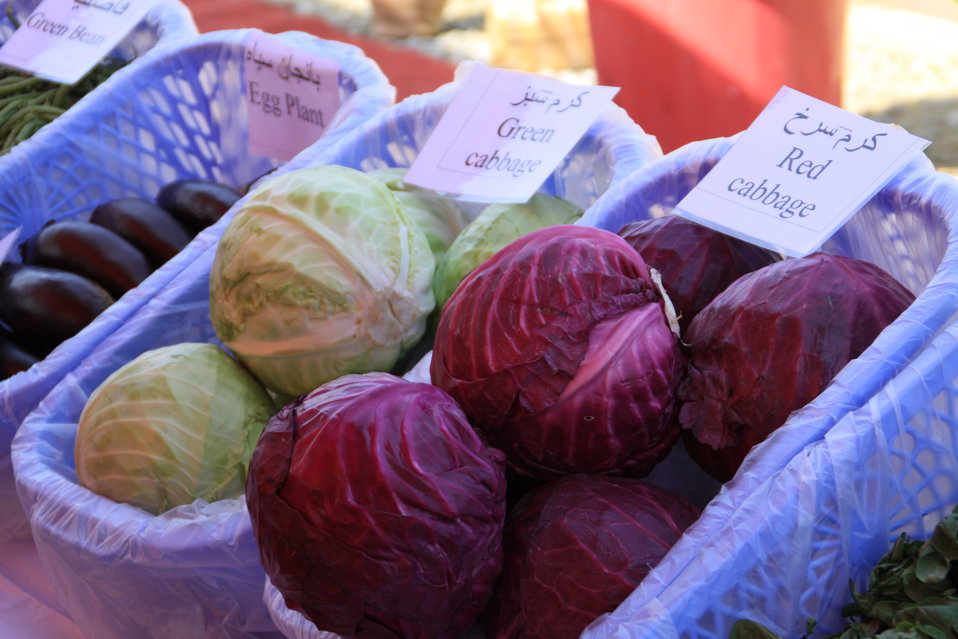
Badam Bagh Farm